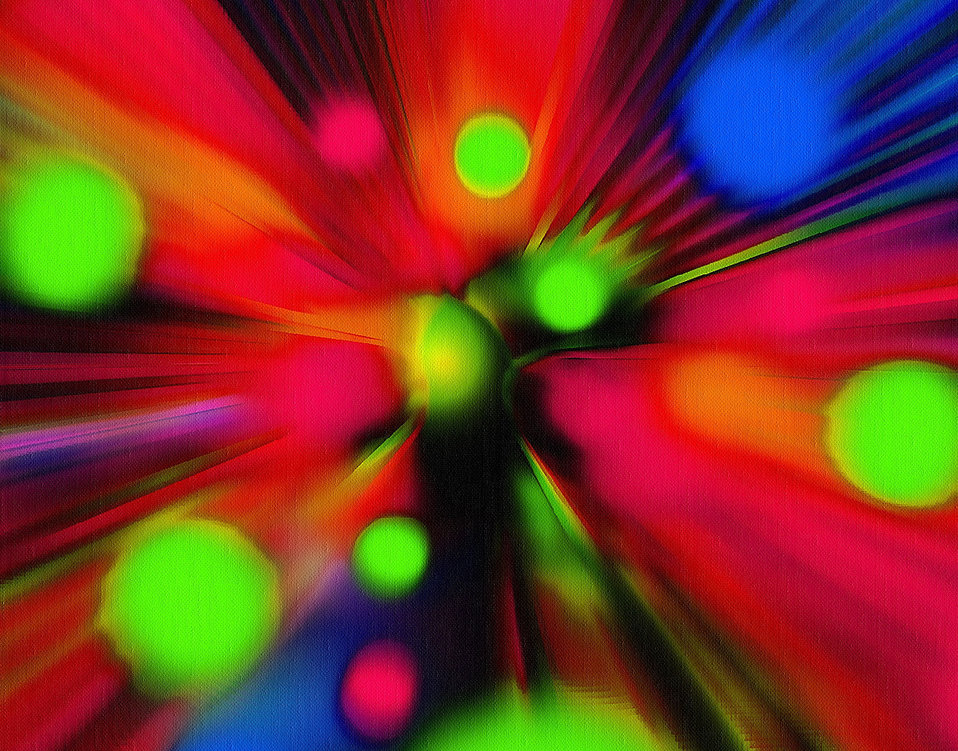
Summer colors on canvas

Background.